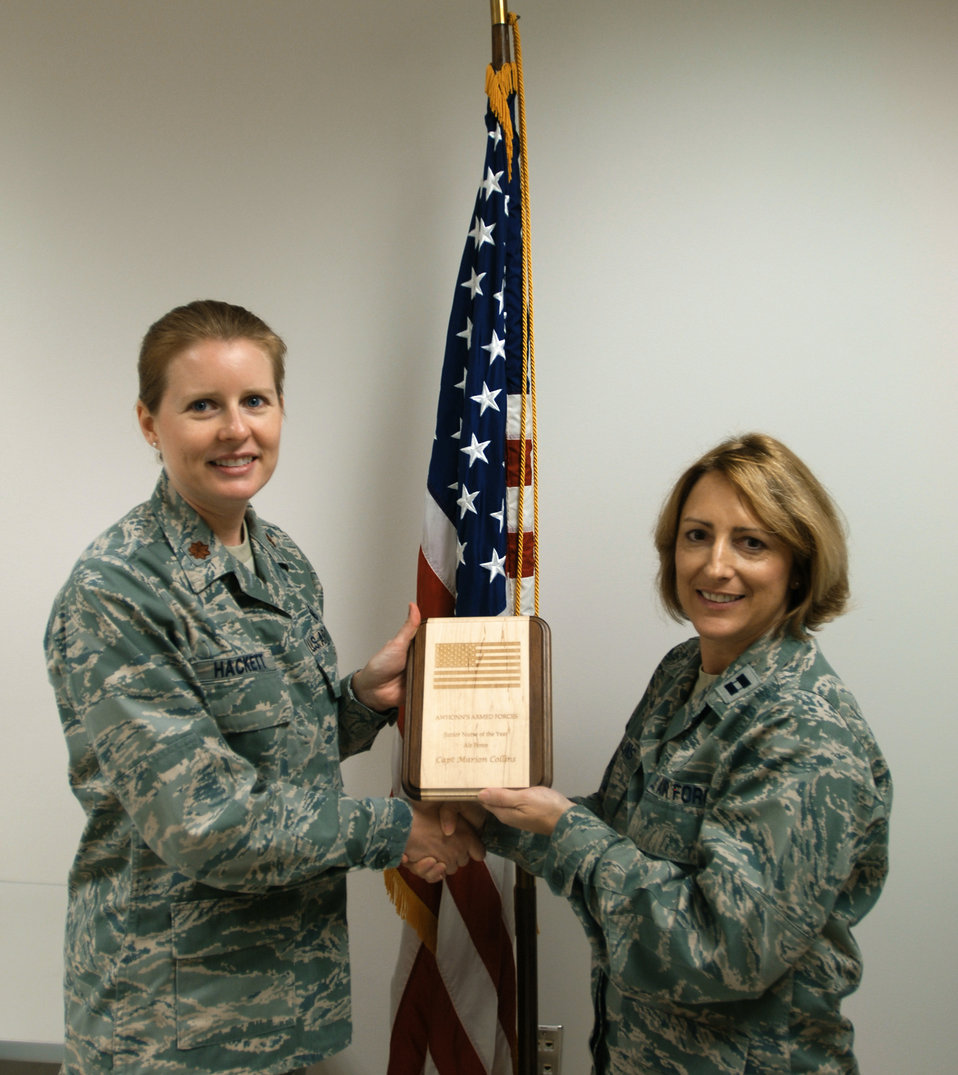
Langley nurse earns national honor

Maj. Kristine Hackett (left) presents Capt. Marion Collins with the Association of Women's Health, Obstetric and Neonatal Nurses Armed Forces Section's 2010 Junior Nurse of the Year award at the 633rd Medical Group women's health clinic. Captain Collins won the award during the AWHONN annual conference in Las Vegas for her dedicated body of work as an Air Force nurse. Major Hackett is the 633rd MG women's health clinic flight commander and Captain Collins is the women's health clinic nurse manager.